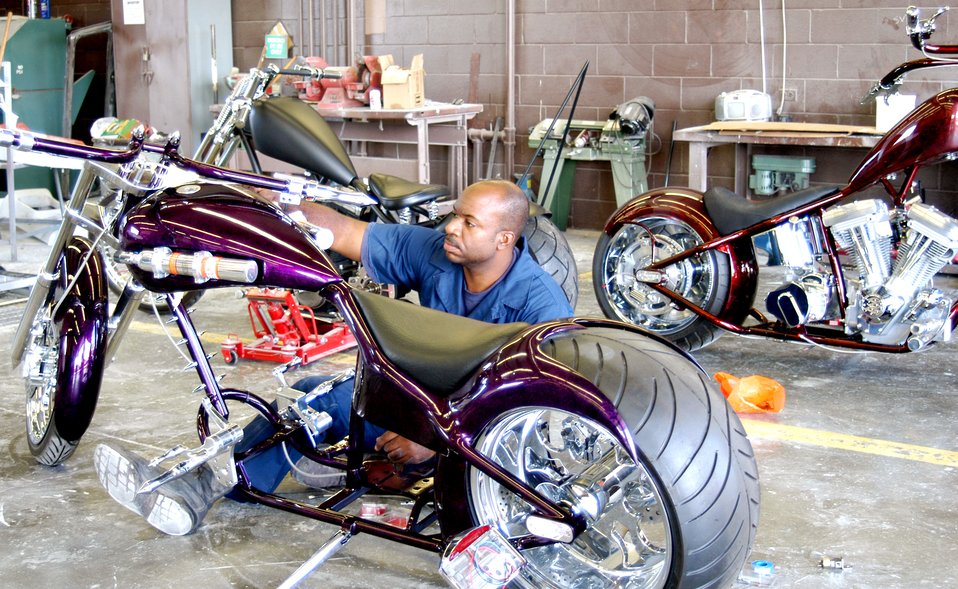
Sergeant's love of steel, paint creates rolling artwork

HICKAM AIR FORCE BASE, Hawaii -- Tech. Sgt. Greg Price runs a brake line on a pro street chopper he is building to show in the 3rd Annual Choppers-Only Show in Honolulu. This is the 14th bike he has built in the past four years. He is a C-40B aircraft crew chief with the 15th Airlift Maintenance Squadron here.